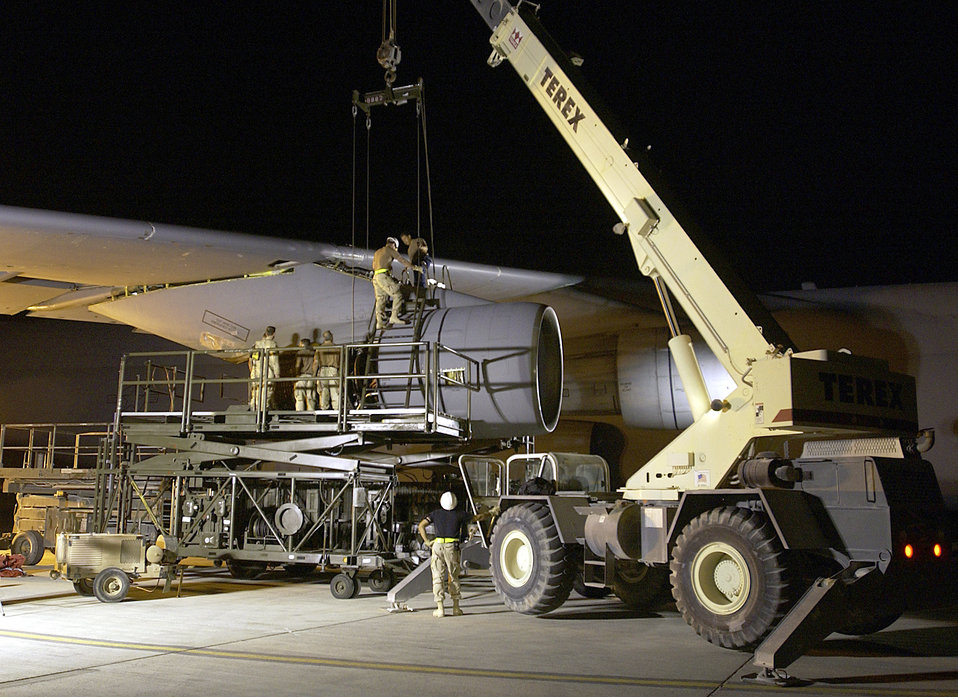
Big engine trouble

SOUTHWEST ASIA -- Airmen with the 8th Expeditionary Maintenance and 379th Expeditionary Civil Engineer Squadrons remove the No. 4 engine from a C-5 Galaxy at a forward-deployed location here Jan. 14. The Galaxy landed with three engines after it had an in-flight emergency during take off from Baghdad International Airport. Initial reports indicate the incident was the result of hostile action from the ground.